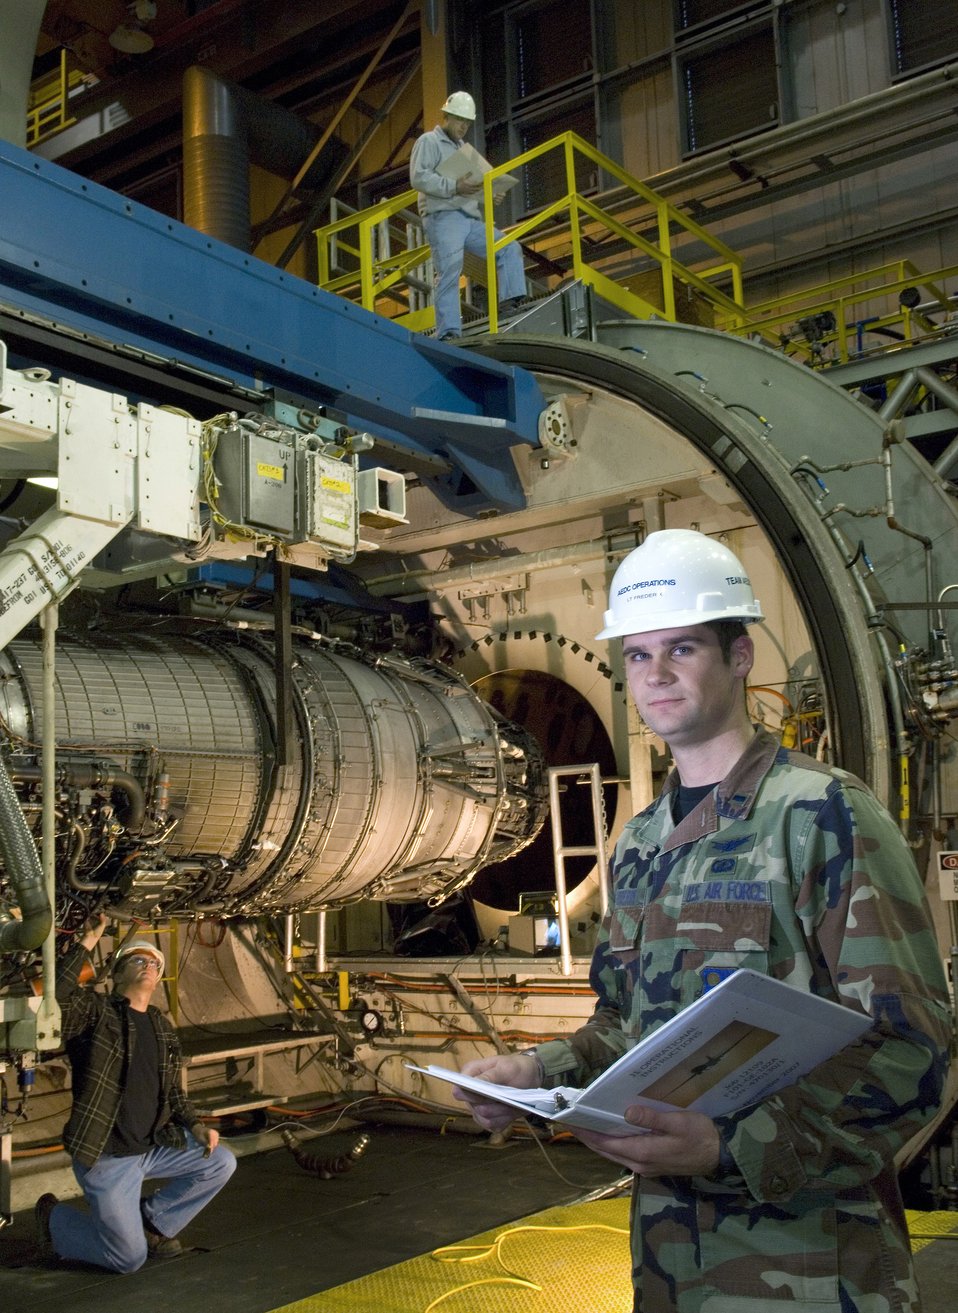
Lieutenant's oversight mission vital to Air Force testing

1st Lt. Josh Fredrick reviews maintenance checklists for a General Electric F101 engine being used for the initial testing of a 50-50 mix of Fisher-Trosch and JP-8 jet fuels at Arnold Engineering Development Center, Arnold Air Force Base, Tenn. The new synthetic fuel will reduce U.S. dependency on foreign oil and increase our choices for fuel. Lieutenant Fredrick is an air propulsion test project manger for the center.